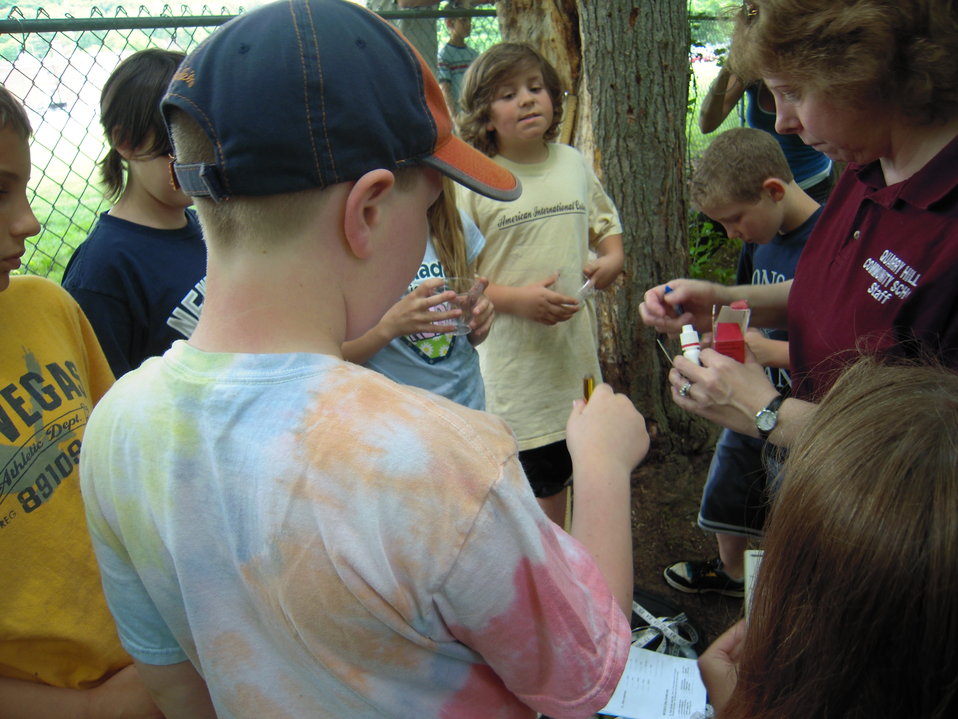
Finding water's pH level